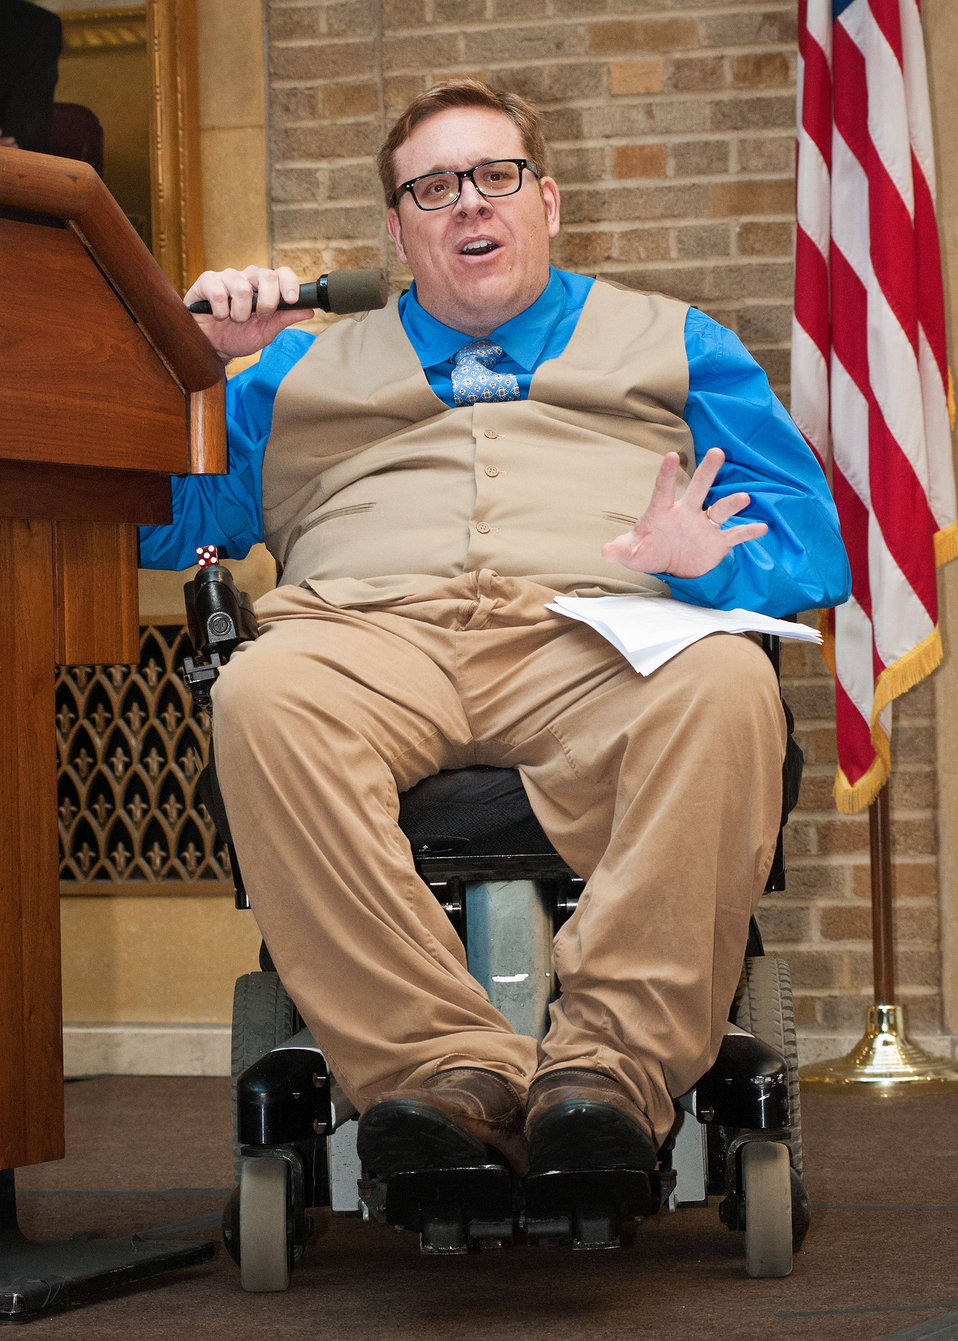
Founder of Federal Employees with Disabilities (FEDS) Jason Olsen speaks at the U.S. Department of Agriculture (USDA) Departmental Management (DM) Target Center 20th Anniversary at USDA in Washington, D.C. on Thursday, Sept. 13, 2012. FEDs is a not-for-profit organization dedicated to ensuring that the rights, privileges, benefits and opportunities for individuals employed by the Federal government are equal to those of their Federal sector peers. The USDA Target Center has provides Assistive Technology to employees with disabilities. The Center has assisted thousands of individuals with disabilities to further contribute to the mission of USDA.